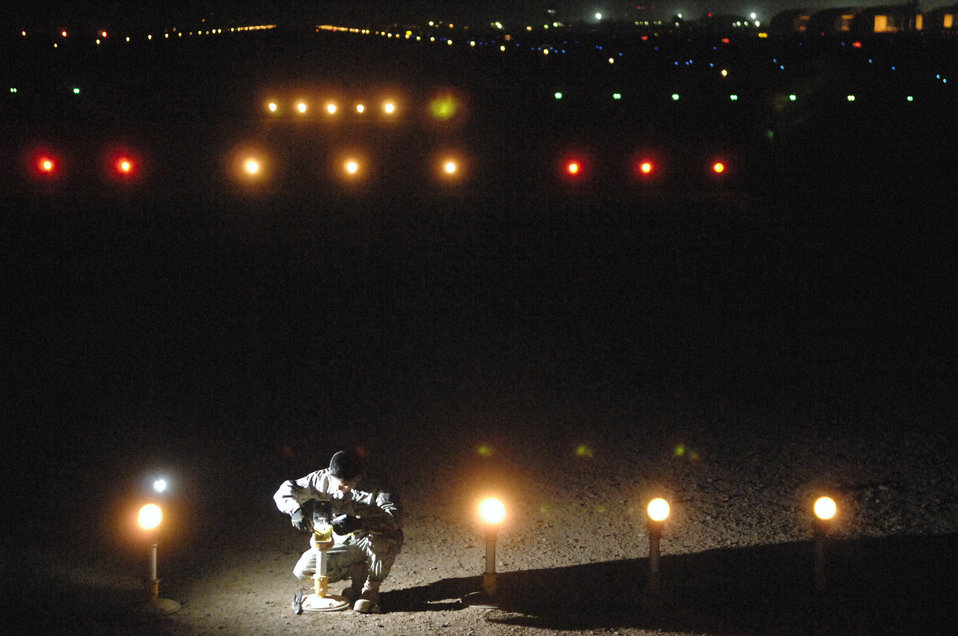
Airmen light the way

Staff Sgt. Samnang Lay replaces a bulb on an approach light July 5 at Joint Base Balad, Iraq. Sergeant Lay is a 332nd Expeditionary Civil Engineer Squadron electrician deployed from Ellsworth Air Force Base, S.D.